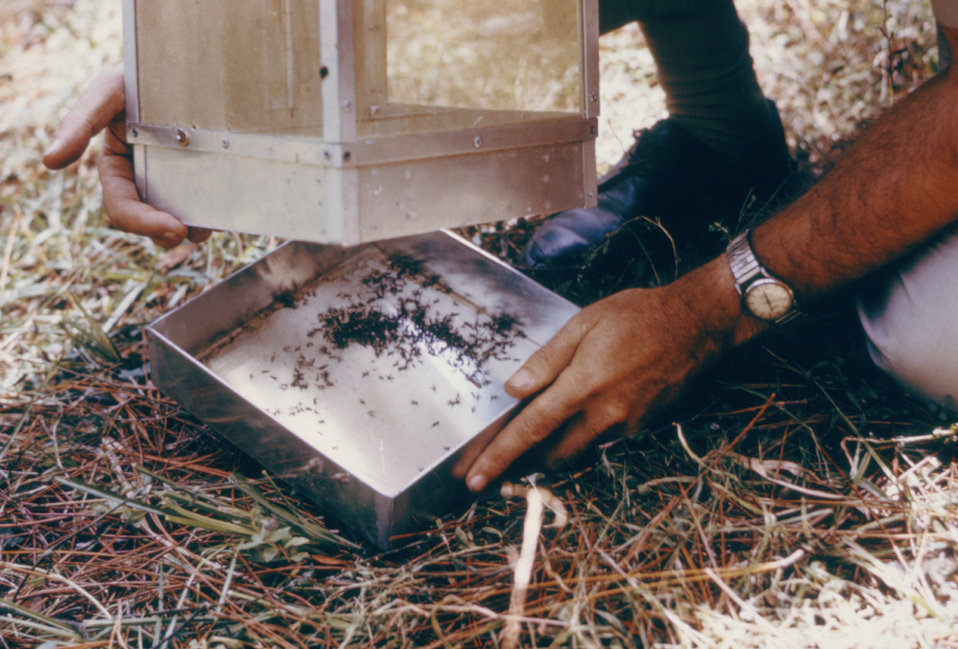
This is a close-up view of a CDC field researcher removing a mosquito-filled tray from a horse stable mosquito trap.